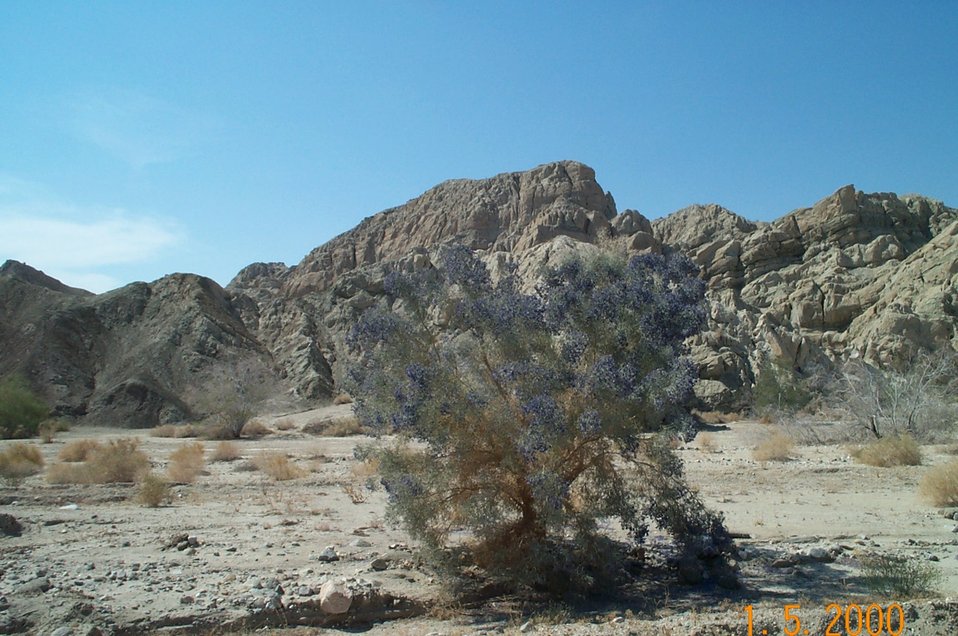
Desert vegetation (smoke tree in bloom)